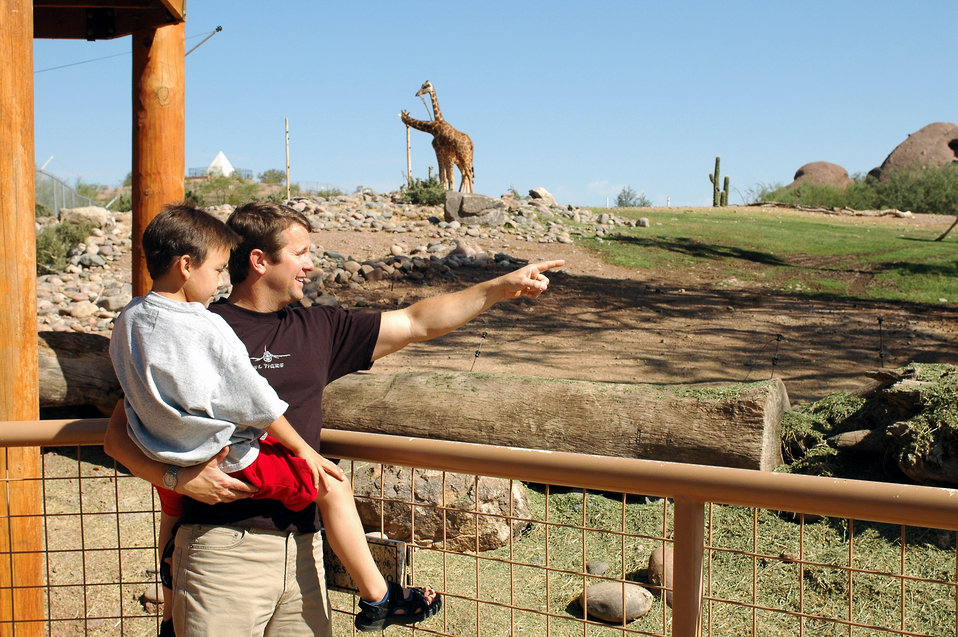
Airman Volunteers as Boy's

Dominic Magne and Lt. Col. Scott Reinhold enjoy a day at the Phoenix Zoo, Oct. 30. The second-grader and the F-16 pilot have remained friends since Dominic visited the 162nd Fighter Wing in Tucson, Ariz., last year to fulfill his dream to become a fighter pilot.